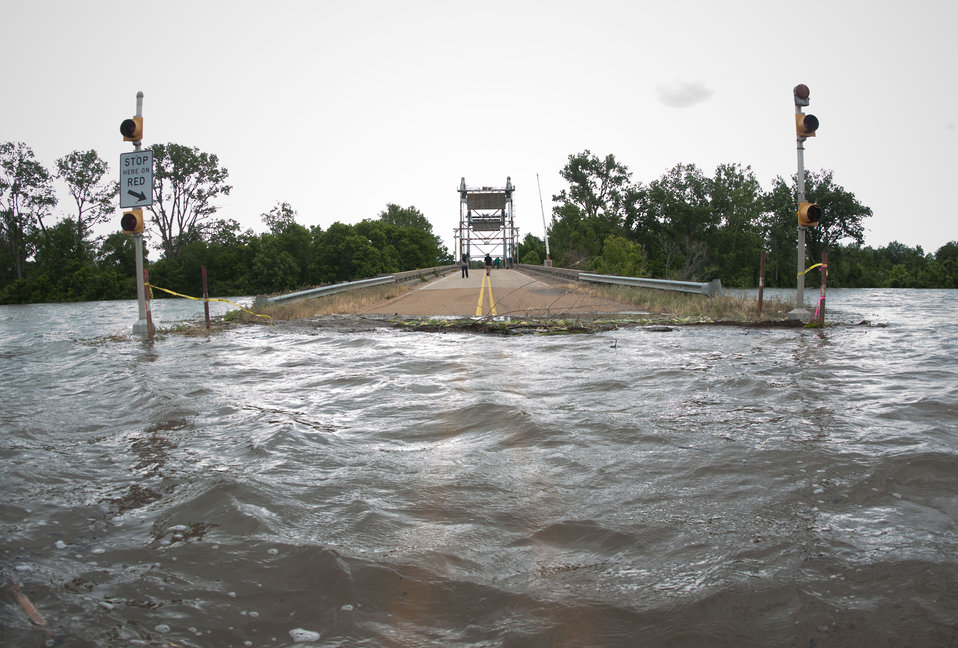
Mississippi River floodwaters have pushed into Yazoo River and into corn (right) and wheat (left) fields to either side of the roadway in Satartia, MS, on Monday, May 16. 2011. The community of 96 was evacuated and approximately 4,000 acres were completely flooded. Wave action and decay has freed parts of corn stalks collecting along the new shoreline. The water saturated soil does not allow enough oxygen to the plant, by the time the water is expected to recede, the stalks will be dead. The wheat was harvested earlier two weeks earlier than scheduled from wet fields and will have to be dried before being used or sold. News media crews come and go throughout the day reporting from this bridge and roadway.